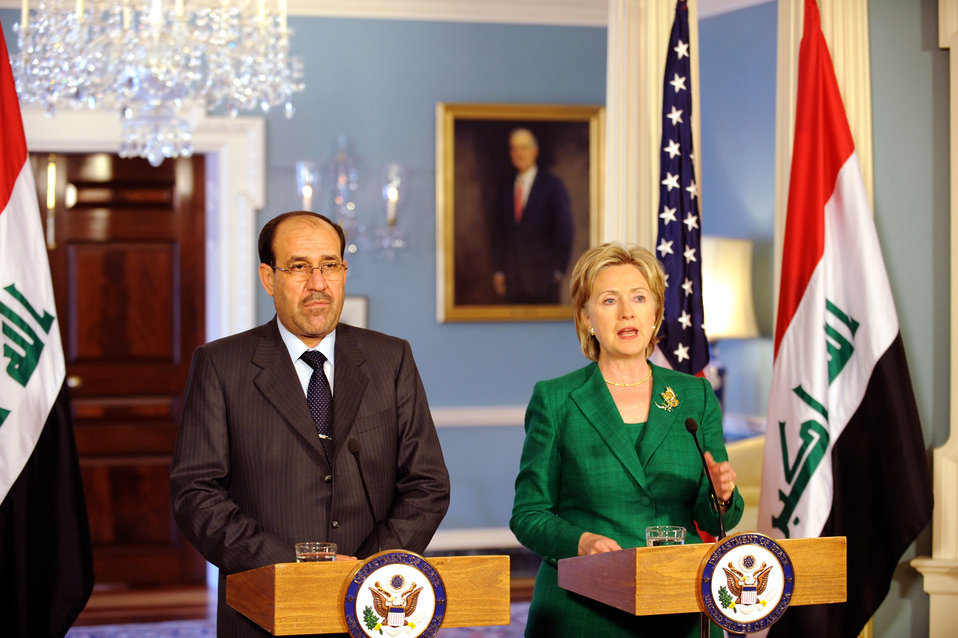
Secretary Clinton Holds Bilarteral Meeting with Iraqi Prime Minister

U.S. Secretary of State Hillary Rodham Clinton holds a press availability with His Excellency Nouri al-Maliki, Prime Minister of the Republic of Iraq at the U.S. Department of State in Washington, DC July 24, 2009.